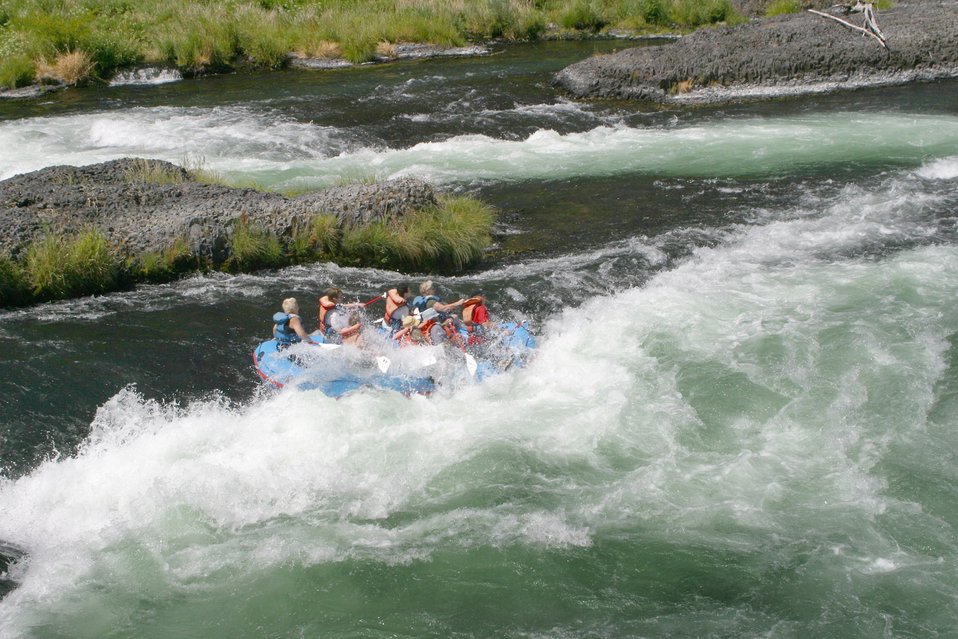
Oak Springs is a Class IV Rapids. The left channel has shallow rocks, large standing waves, turbulent currents and a large hole during high flows. The right channel has a large hole, shallow rocks, and turbulent currents. 7/26/03 Pelton Dam 3600 cfs: Moody Rapids 4300 cfs.